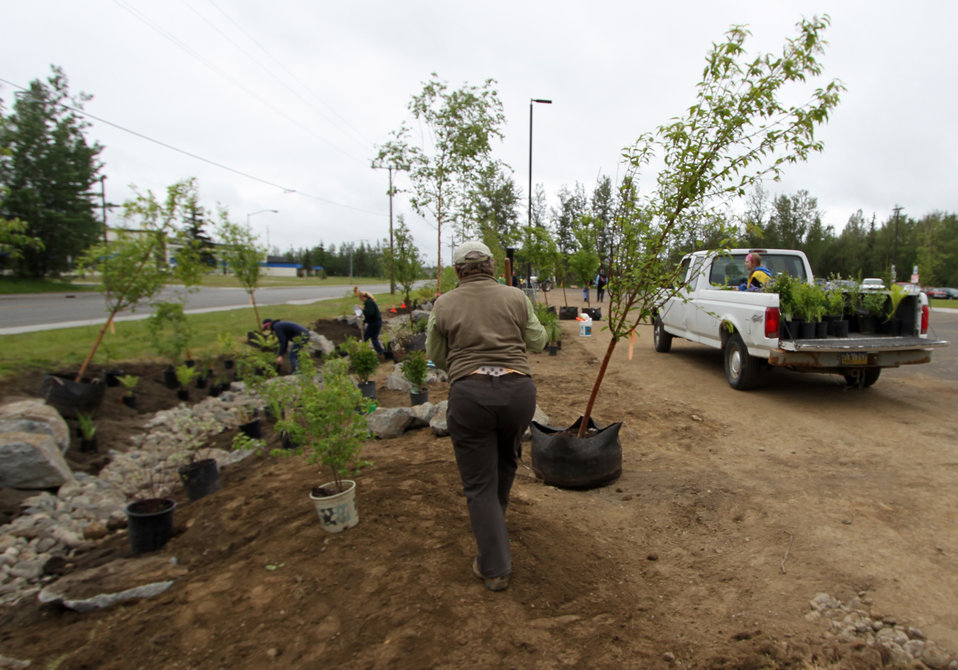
Rain Garden Installation

A rain garden installation at the Palmer Senior Center in Southcentral Alaska. Rain gardens are vegetated areas built specifically to manage stormwater runoff from driveways, sidewalks, roofs, and other paved surfaces. Here, Frankie Barker with the Mat-Su Borough walks the perimeter of the large in-progress rain garden installation. USFWS/Katrina Mueller